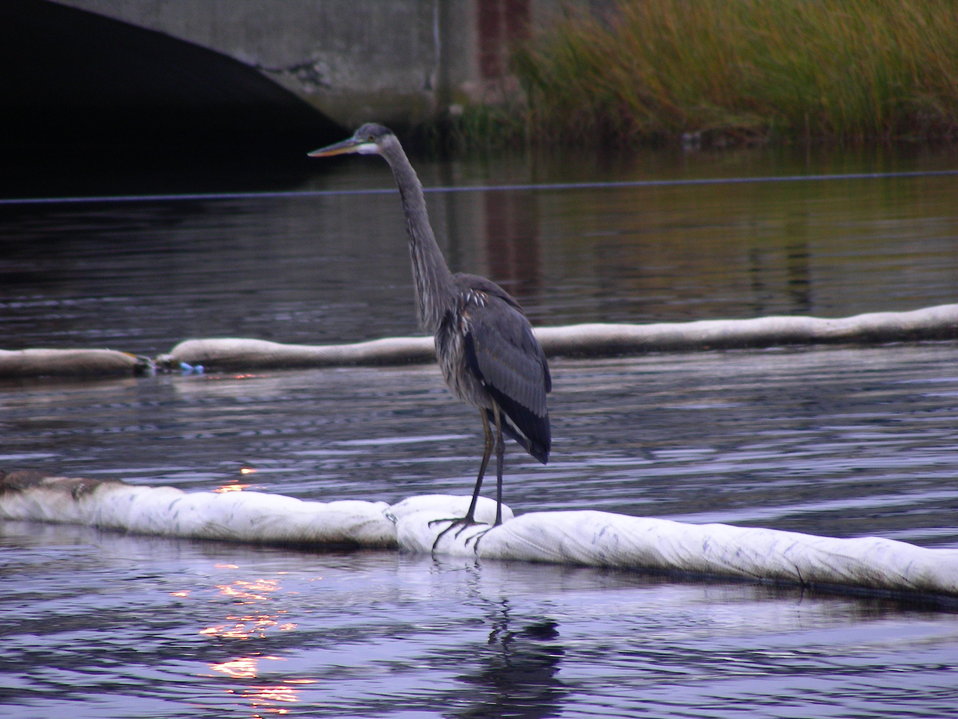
2010, Casual observer on project boom

This sums up our actions.

Sooner, rather than later, we'd like to give the communities that surround New Bedford Harbor a clean, healthy environment once again.